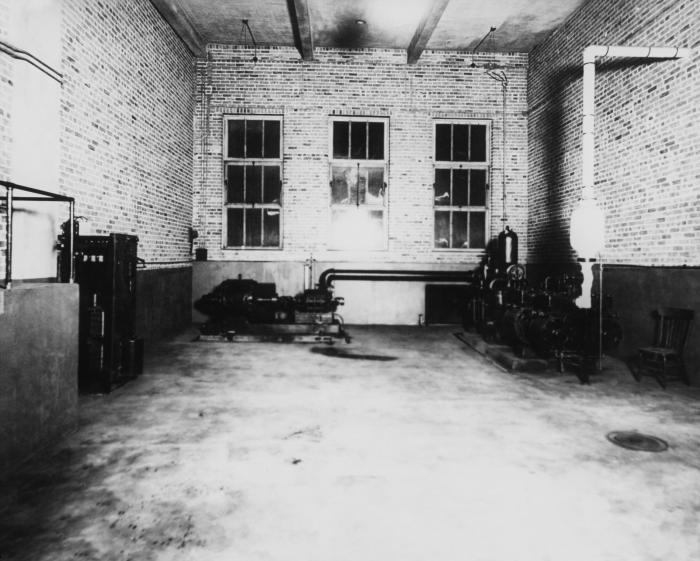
This historic 1934 image revealed the interior of the Hastings, Minnesota municipal water supply's 'drilled' well pumping station, while PHIL image #8480, depicted the exterior view of this facility.